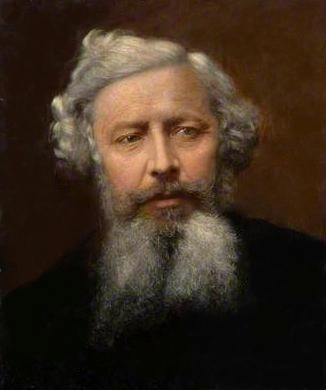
Painting of George Dawson, preacher of the Civic Gospel in Victorian Birmingham